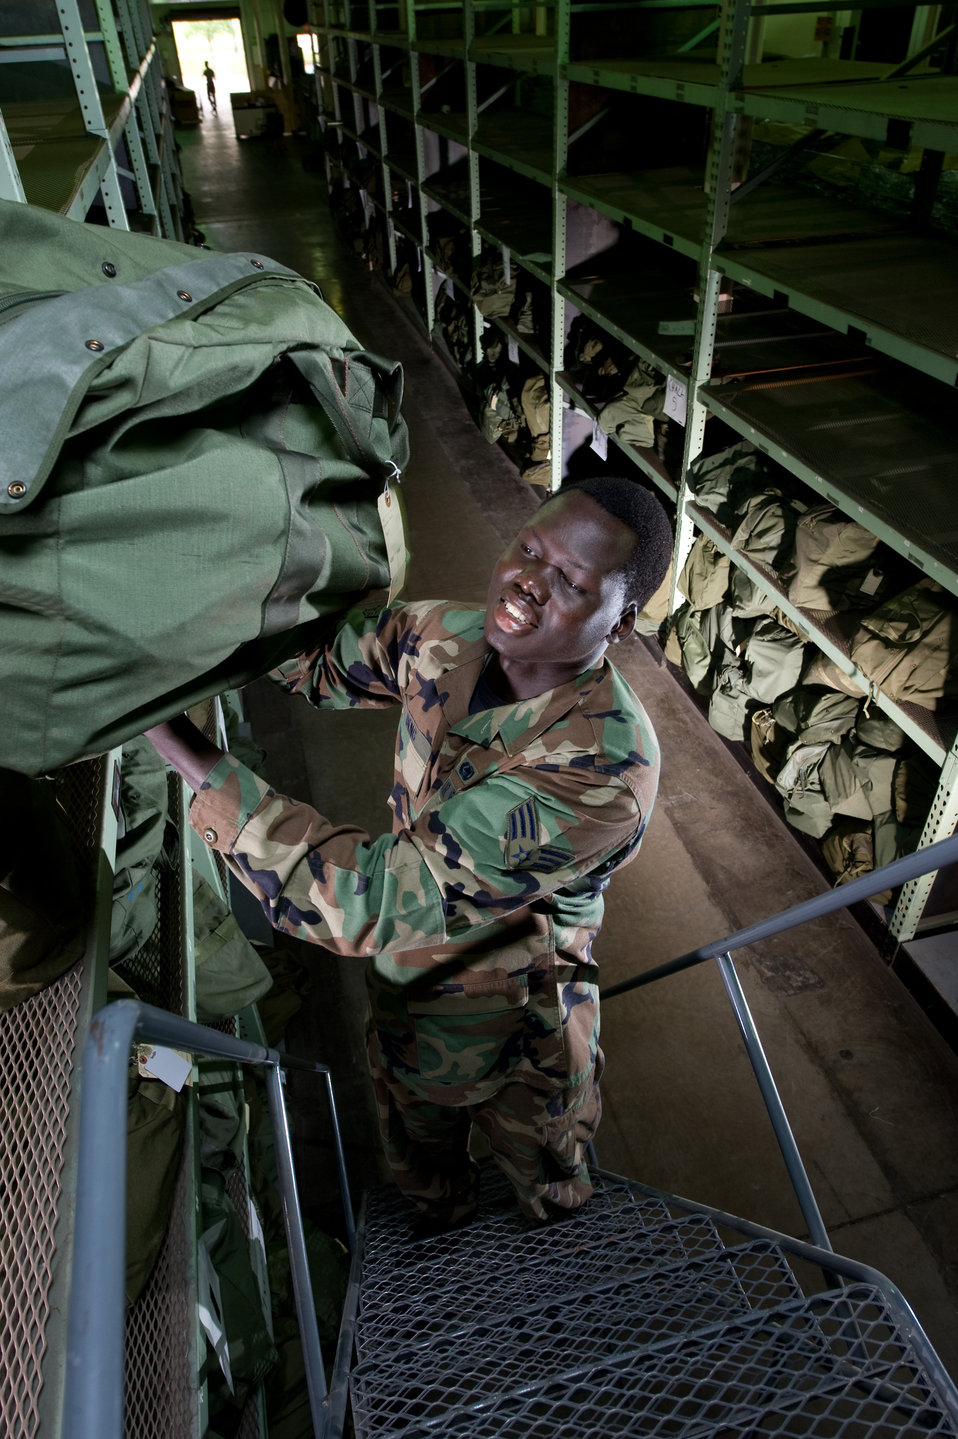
For Airmen Deng Deng and other immigrant Airmen, the dream of citizenship is a complicated
process made easier and quicker through the help of the Air Force.